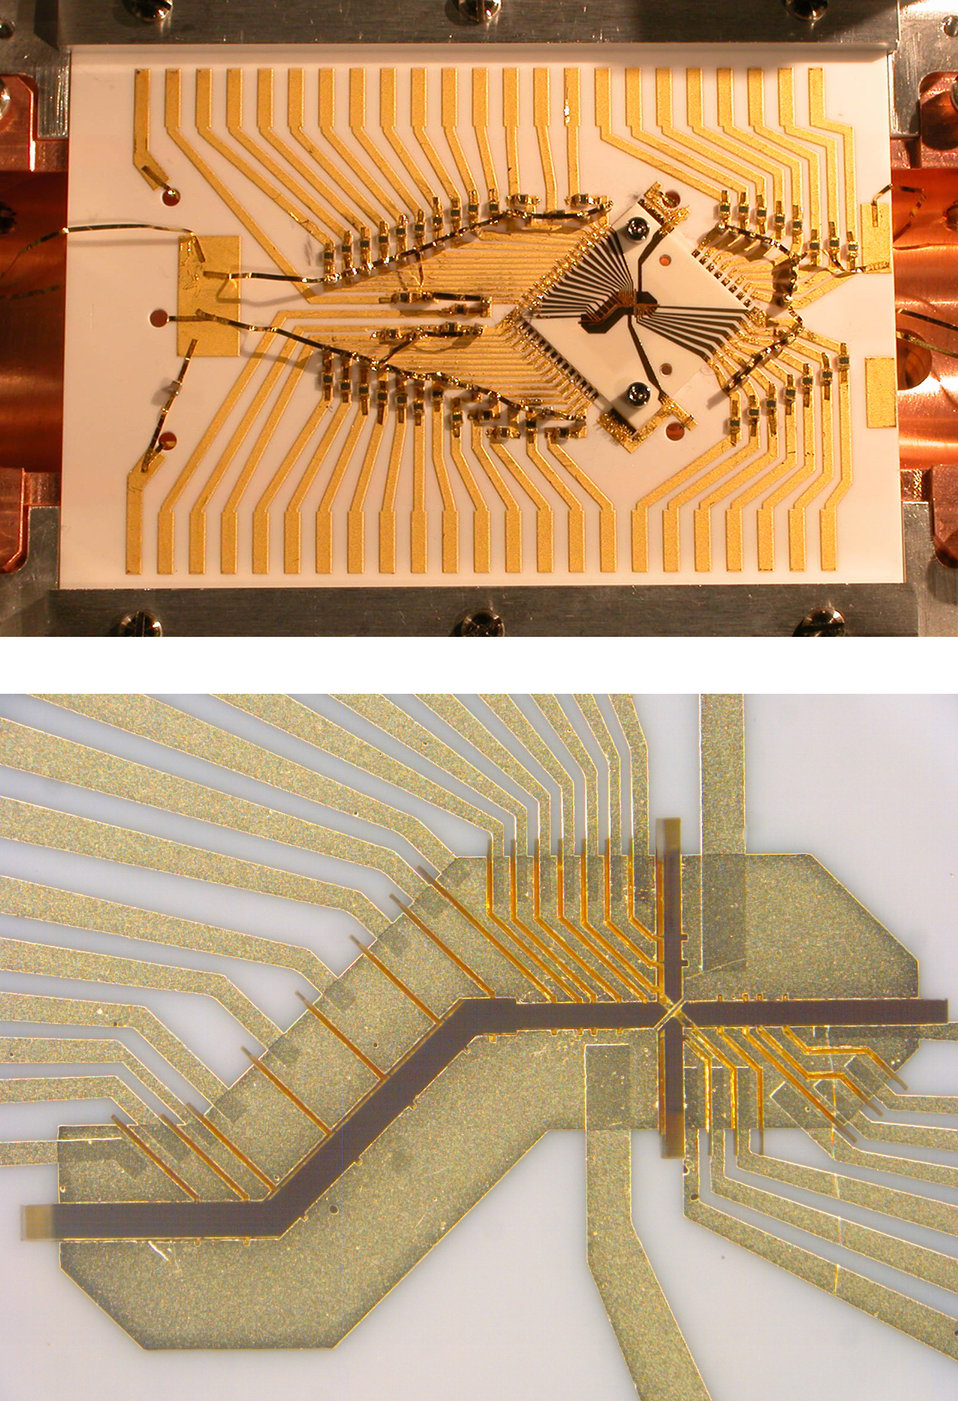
Ion trap

The NIST X-trap is constructed from a sandwich of two diamond-shaped alumina wafers, visible in the right center of the first photo. The second photo shows a close-up of the wafers. Ions are created in the lower left portion of the dark grey channel, which is a trench cut through both wafers. By controlling voltages on the 46 electrodes, the ions can be shuttled along the channels and through the junction between the two gold-coated bridges that form the X while remaining much cooler than in previous experiments.